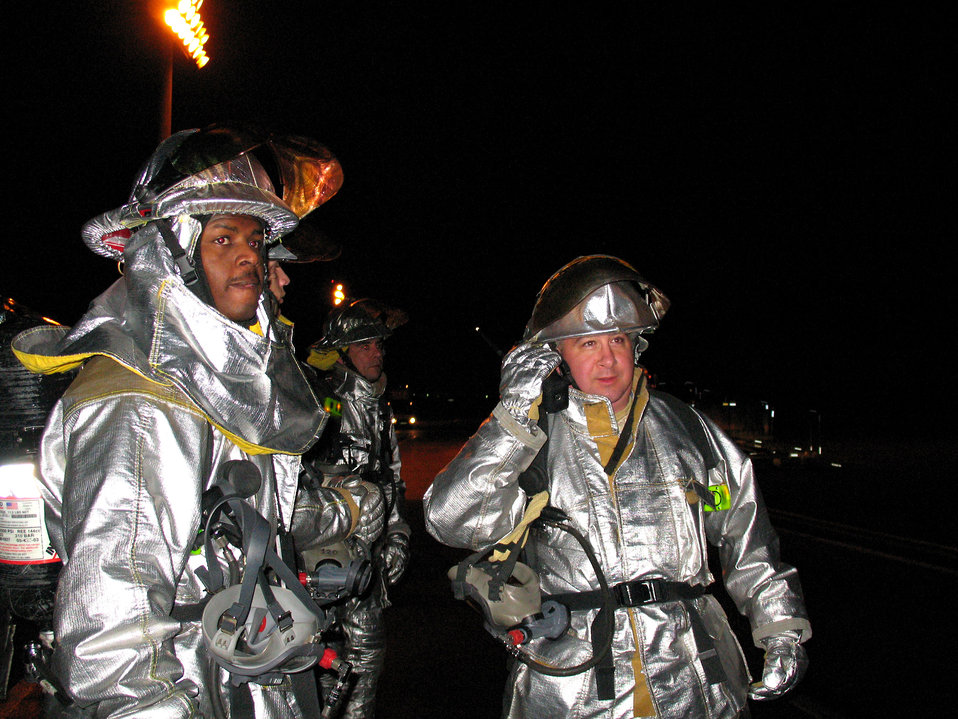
Lajes Airmen tested on readiness capabilities

Staff Sgt. Christopher Dooley and Tech. Sgt. Chester Berry respond to a fuel spill exercise March 27 on the flightline at Lajes Field, Azores. The exercise is part of Lajes Field's Operational Readiness Inspection that tests the readiness of Airmen in emergency situations.